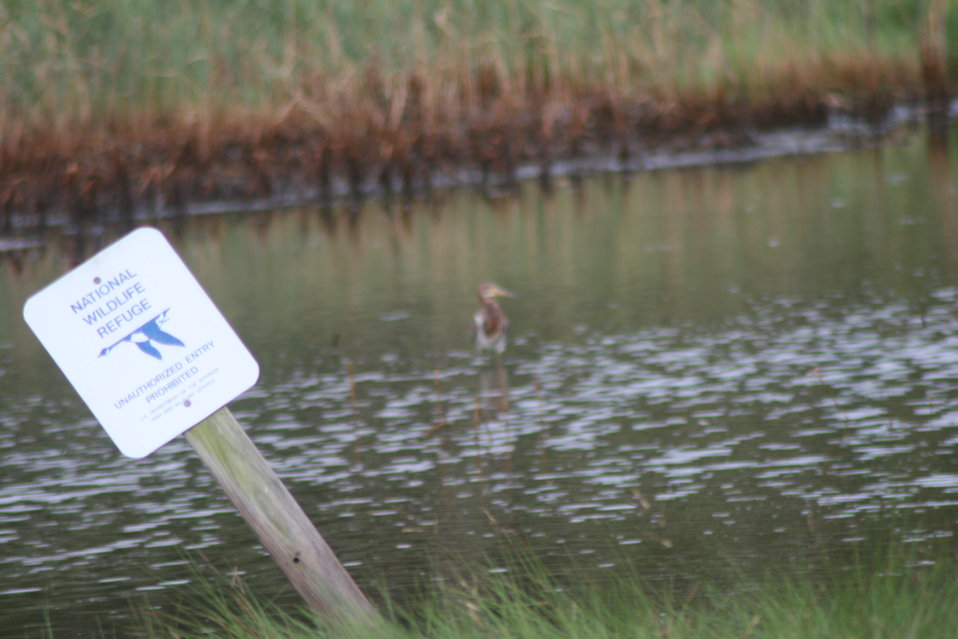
Prime Hook NWR